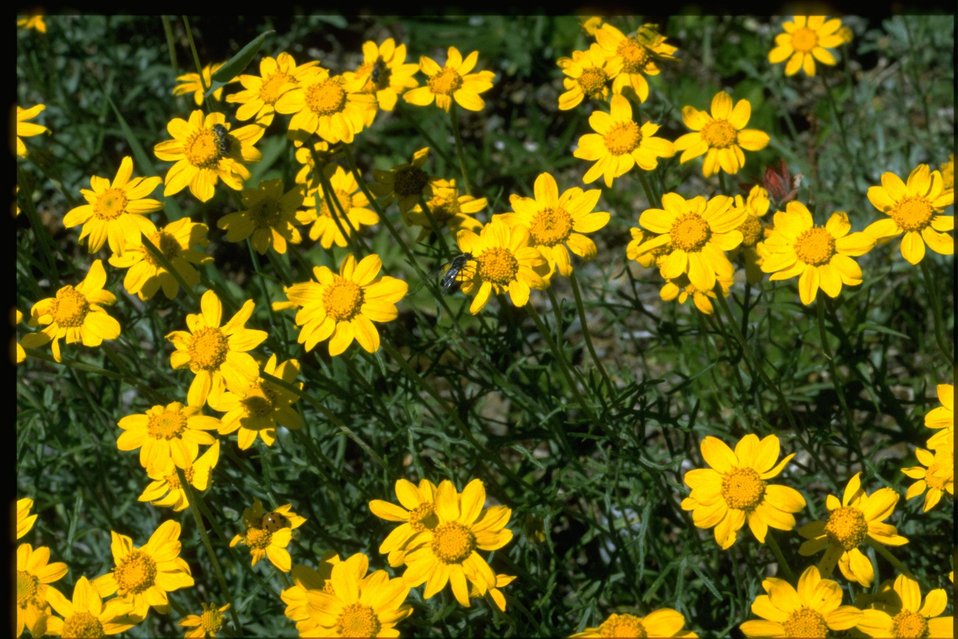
Medium shot of wildflowers (Asteraceae).